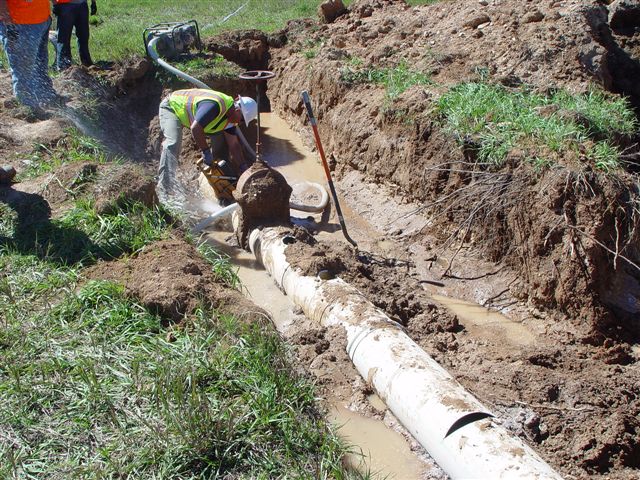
Las Vegas 6

Water gushes from an old pipe as workers from Deerfield Corp. work to rehabilitate a water delivery and pipeline system at Las Vegas NWR in Las Vegas, N.M.